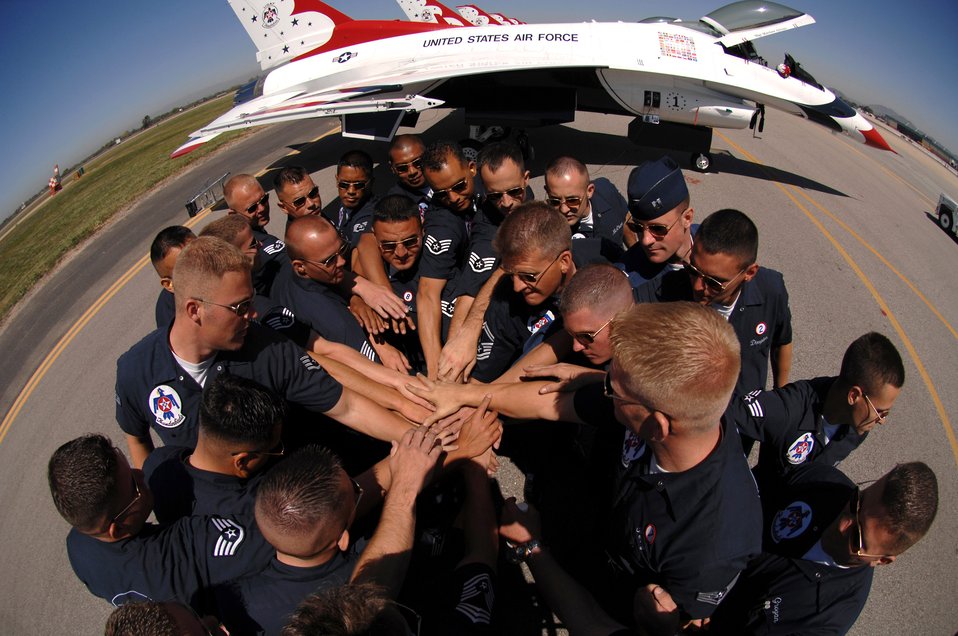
Teamwork at its finest

Air Force Thunderbird maintainers bring it in for a cheer after completing pre-flight checks prior to a Thunderbird practice show at Naval Base Ventura County, Point Mugu, Calif.